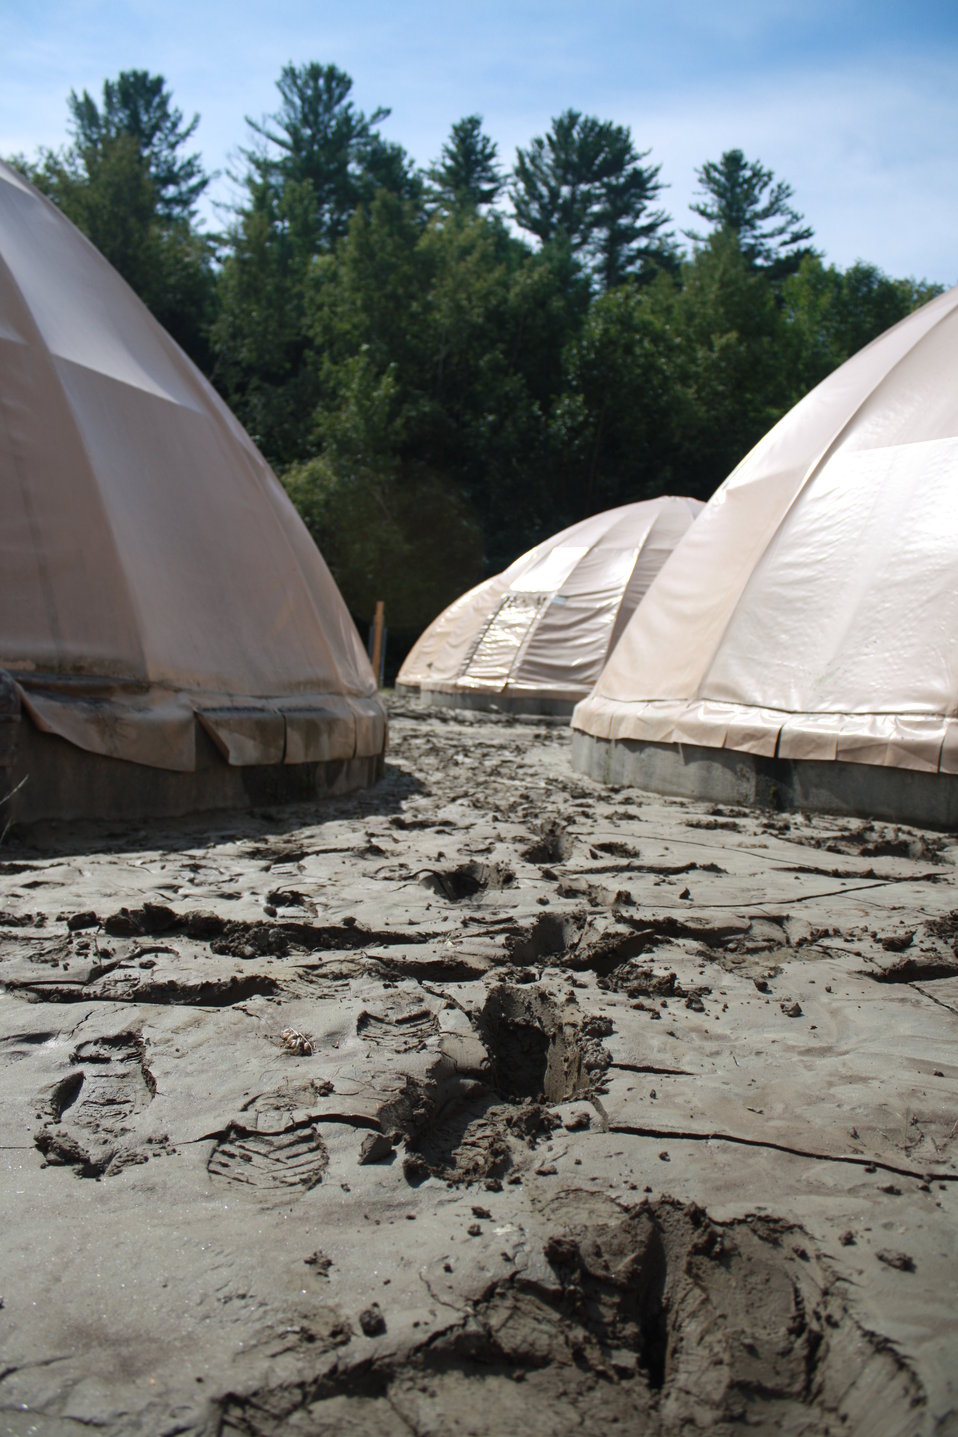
River sediment carried by Hurricane Irene flood waters deposited on White River National Fish Hatchery grounds

Significant amounts of river sediment were deposited on White River National Fish Hatchery grounds during the Hurricane Irene flood event.